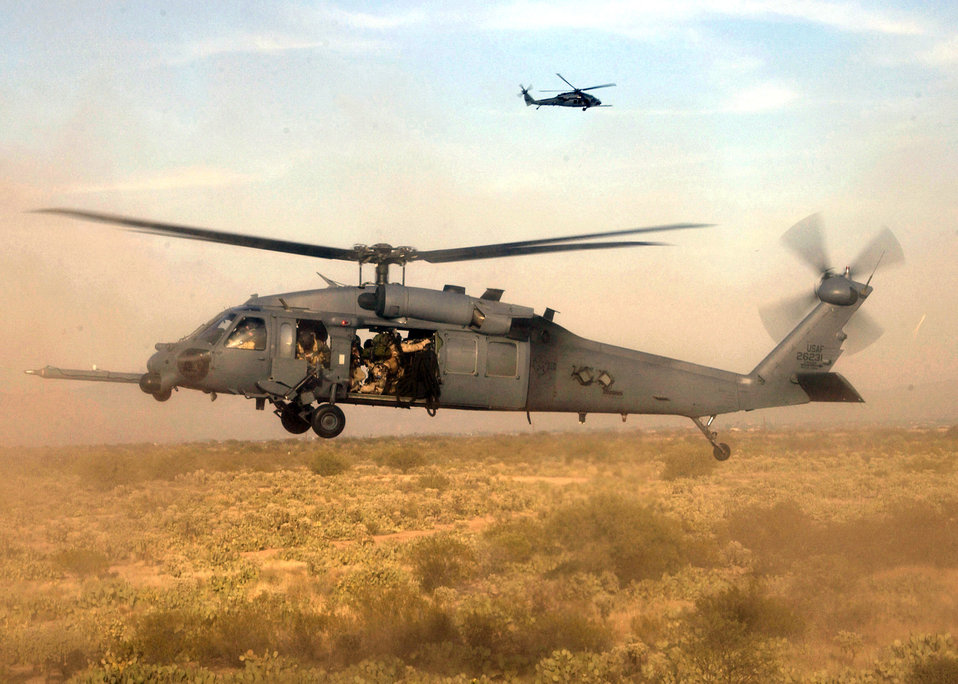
Extraction exercise

DAVIS-MONTHAN AIR FORCE BASE, Ariz. (AFPN) -- Pararescuemen from the 306th and 48th Rescue Squadrons prepare to fast rope from an HH-60 Pave Hawk helicopter in an exercise here. The combined training exercise simulated the rescue of